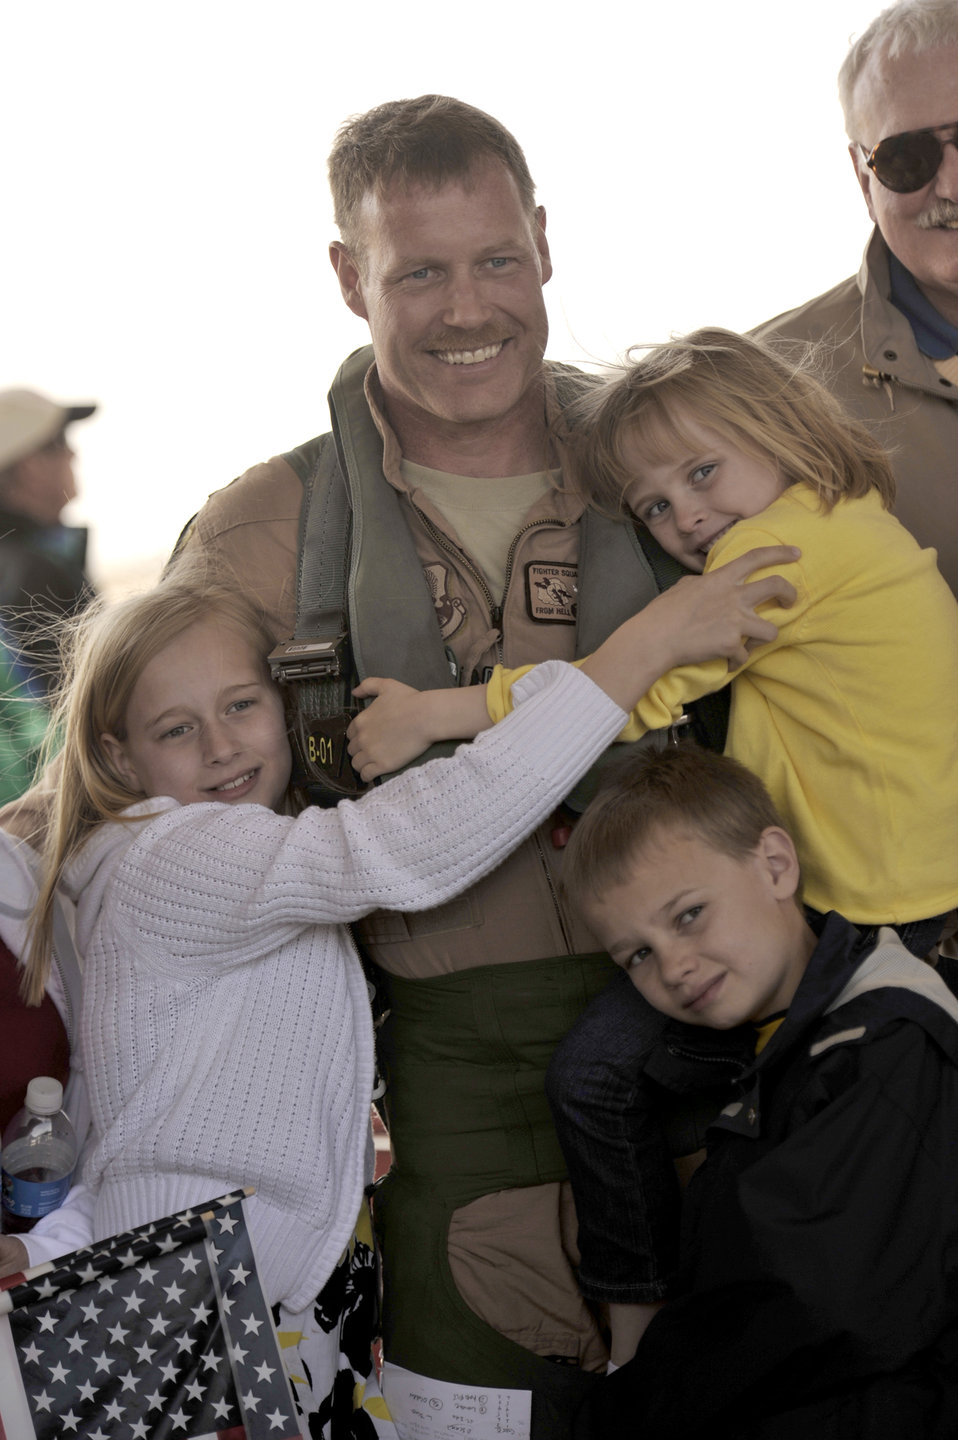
Airmen arrive

Col. William Bailey reunites with his family upon his arrival April 15, 2011, at Hill Air Force Base, Utah. Colonel Bailey is the commander of the 4th Fighter Squadron and an F-16 Fighting Falcon pilot. He led six jets as the first of their team to return from a six-month deployment to Bagram Air Base, Afghanistan.